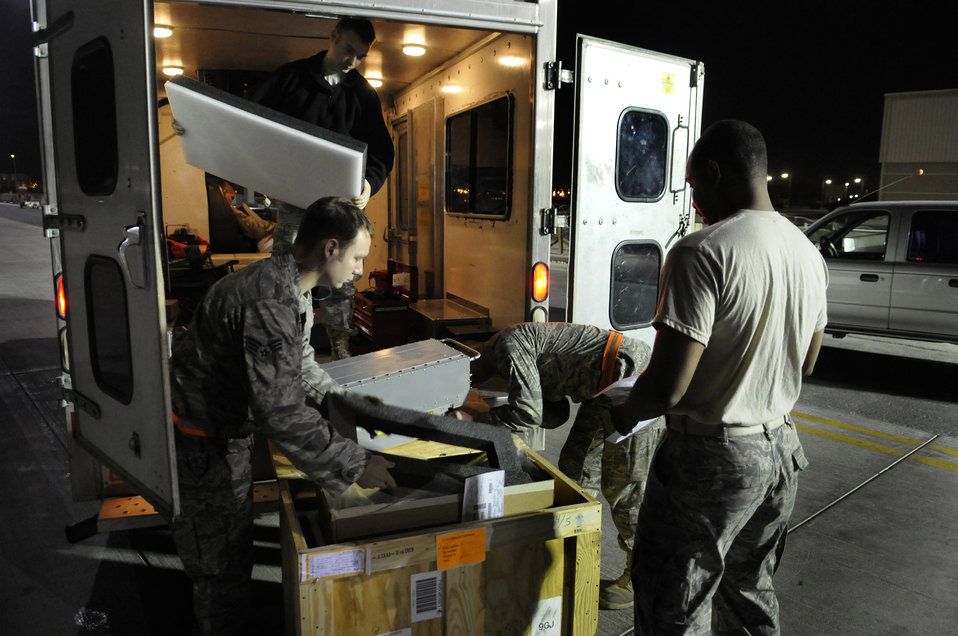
Parts to go

Staff Sgt. Daniel Harrington (left) delivers an aircraft part to Senior Airman Adam Hall Dec. 28 on the flightline of an air base in Southwest Asia. The supply team runs the consolidated aircraft parts facility, a collocated facility where all maintenance teams can go to pick up items needed to fix their specific aircraft. Sergeant Harrington is supply journeyman assigned to the 379th Expeditionary Logistics Readiness Squadron. Airman Hall is an aircraft maintenance journeyman assigned to the 379th Expeditionary Aircraft Maintenance Squadron.